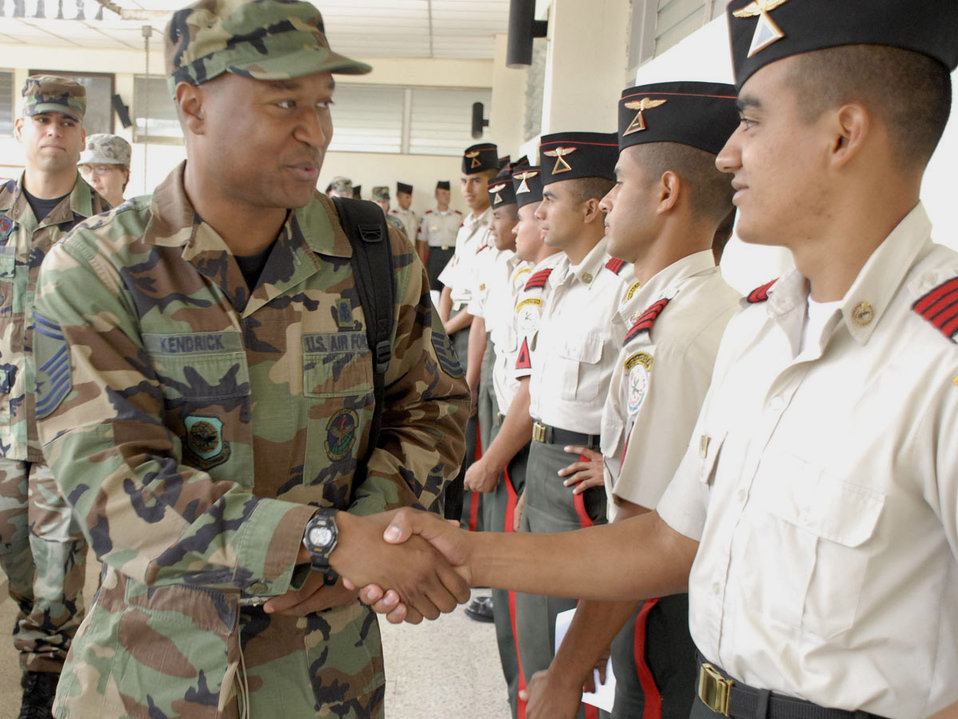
American servicemembers visit Honduran military academy

Senior Master Sgt. Anthony Kendrick is greeted by a cadet April 16 at the Honduran military training academy in Tegucigalpa, Honduras. Sergeant Kendrick, a member of Joint Task Force-Bravo from Soto Cano Air Base, Honduras, briefed senior cadets on the importance continuous enlisted professional military education plays in the career of U.S. military's enlisted corps.